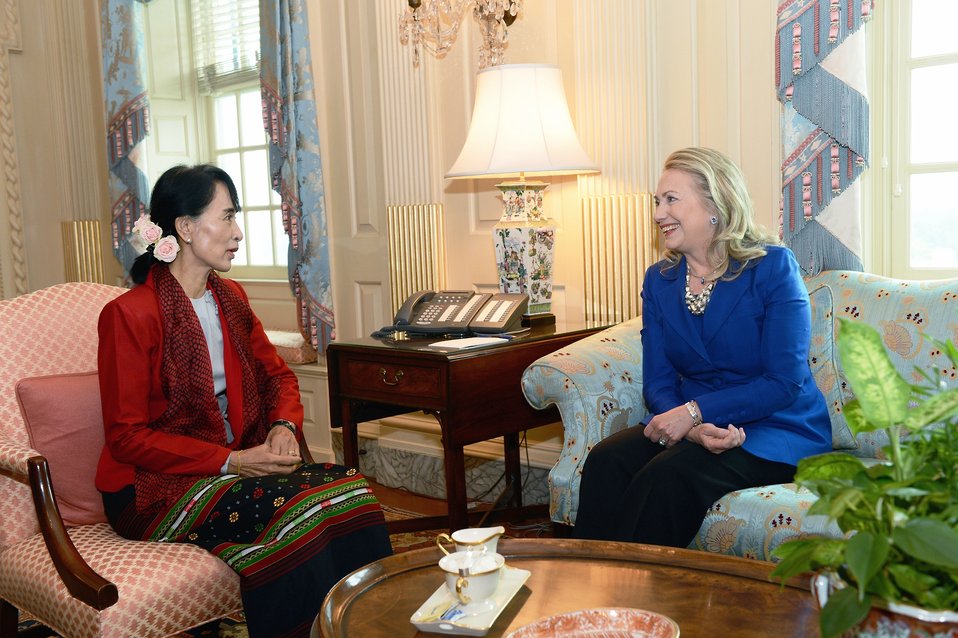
Secretary Clinton Meets With Daw Aung San Suu Kyi

U.S. Secretary of State Hillary Rodham Clinton meets with Daw Aung San Suu Kyi, Chair of the National League for Democracy and Member of Parliament from Kawmhu Constituency, at the U.S. Department of State in Washington, D.C., September 18, 2012.